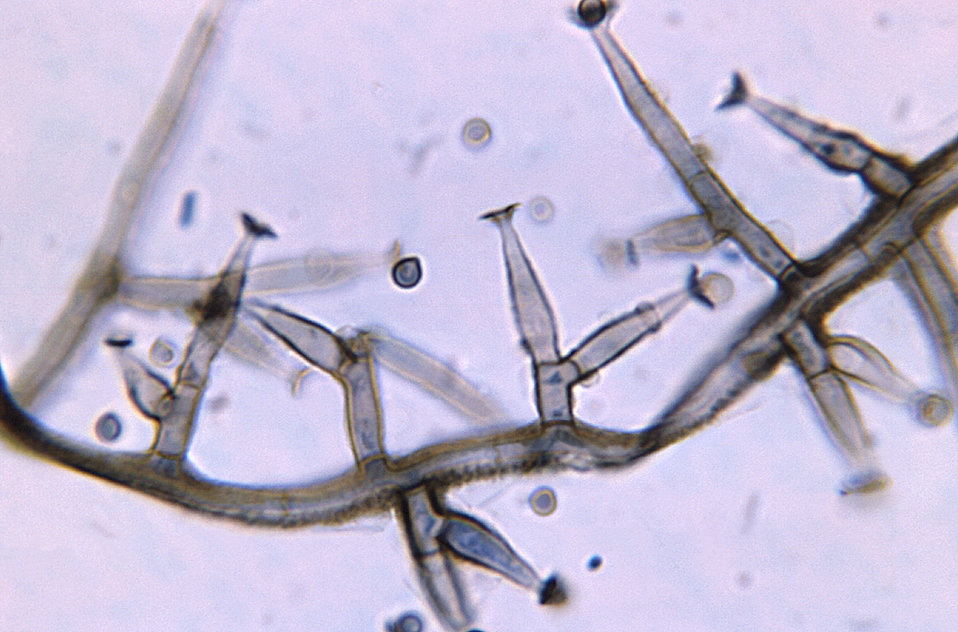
Magnified 1125X, this photomicrograph revealed some of the ultrastructural morphology displayed by the dematiaceous (pigmented) filamentous fungus, Phialophora richardsiae.